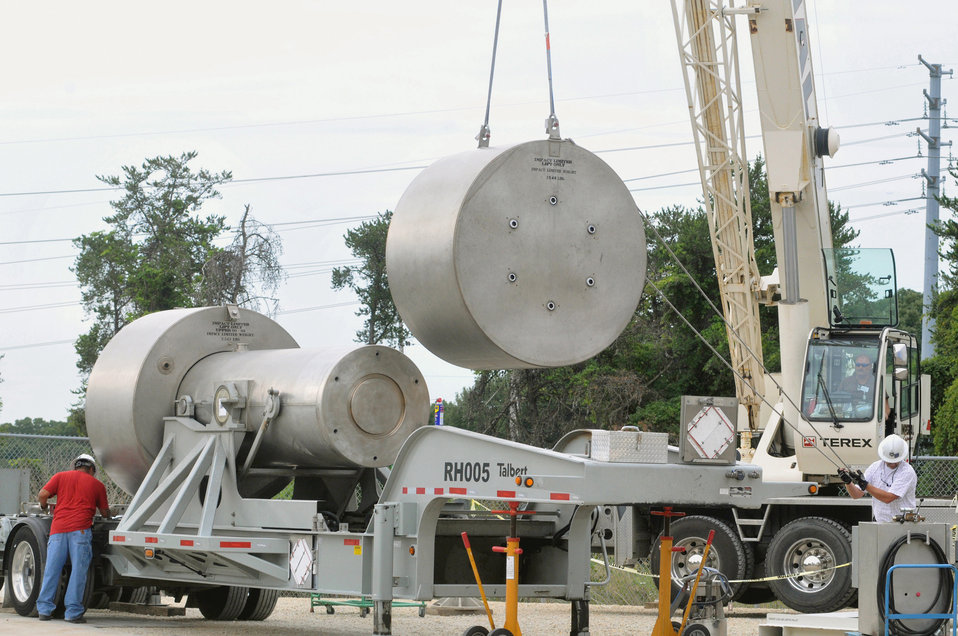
Brookhaven cleanup projects

Nearly $71 million in Recovery Act funds are putting Brookhaven National Laboratory (BNL) on track to wrap up several legacy environmental cleanup projects at two research reactors by September 2011.
The completion of the Recovery Act projects at BNL will end all EM legacy cleanup activities at the Lab.